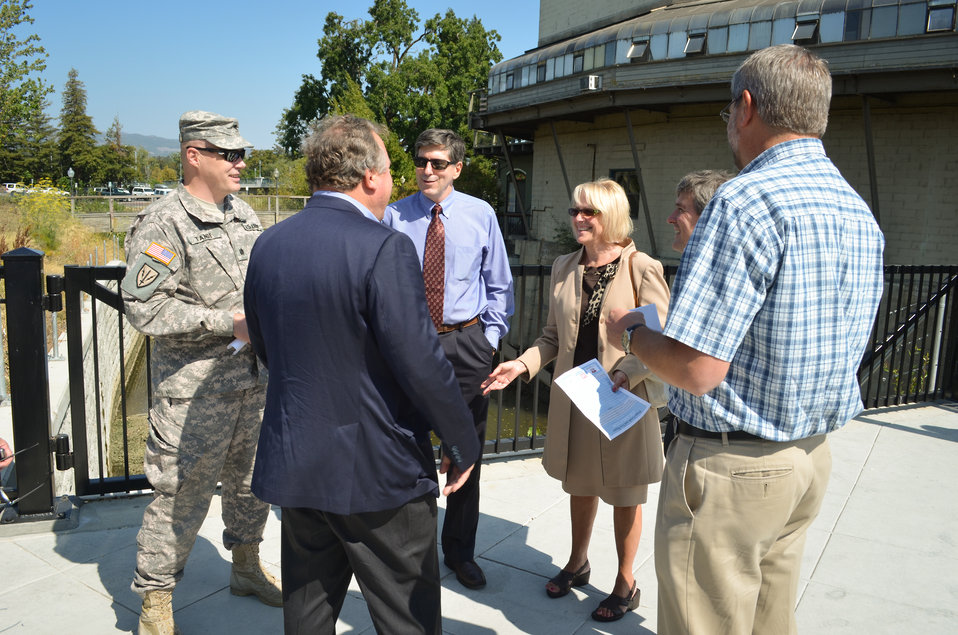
Lt. Col. Chris Tande talks with Napa Mayor Jill Techel

Lieutenant Col. Chris Tande (left), deputy chief of contracting with the U.S. Army Corps of Engineers Sacramento District, talks with Napa Mayor Jill Techel (third from right) and others prior to a celebratory ceremony in Napa, Calif., July 29, 2013. The ceremony highlighted the Corps' $16.6 million appropriation for the Napa Creek project's dry bypass construction.